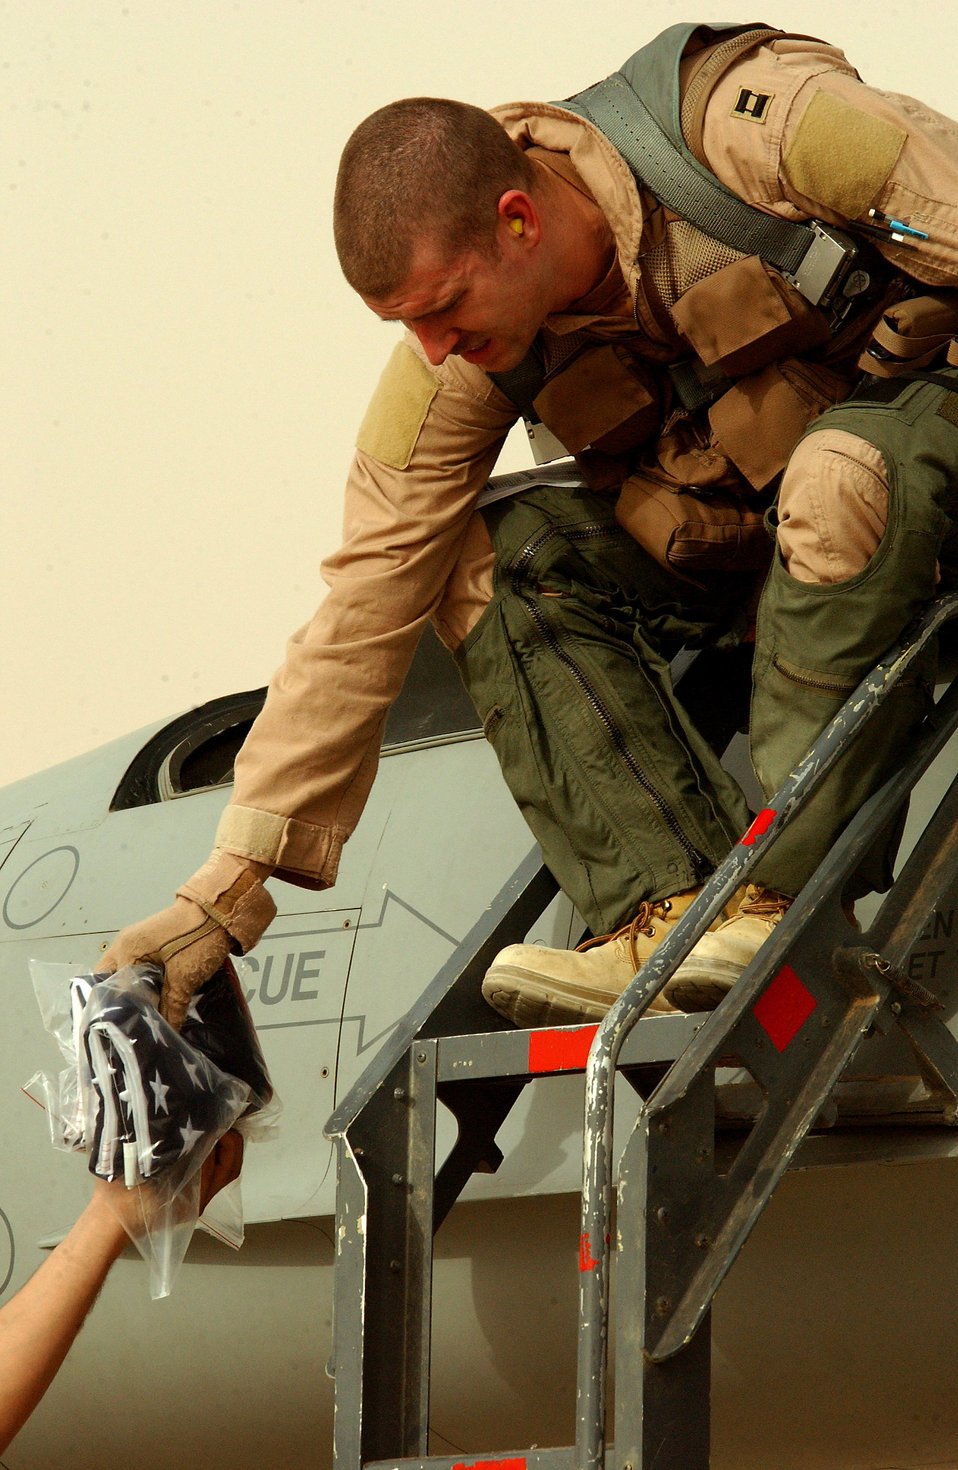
Ayers

OPERATION IRAQI FREEDOM -- Capt. Matt Ayres, an F-16 Fighting Falcon pilot assigned to the 363rd Air Expeditionary Wing, grabs several American flags while preparing to take off for a mission from a forward-deployed location in Southwest Asia on March 27. Ayers is deployed from the 77th Fighter Squadron, Shaw Air Force Base, S.C.